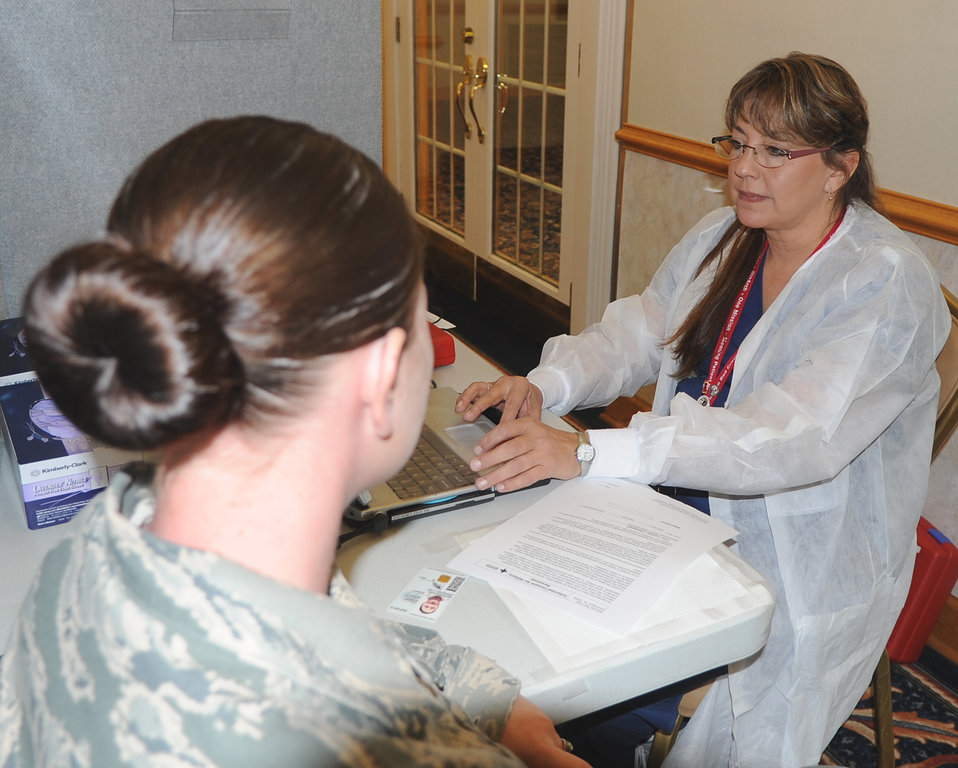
Draining the veins, for a good cause

Staff Sgt. Jennifer Nedzweckas, 4th Security Forces Squadron vehicle control officer, performs a pre-screening questionnaire from Donna Ward, American Red Cross medical technician, prior to donating blood at Seymour Johnson Air Force Base, Nov. 10, 2011. It takes approximately 30 minutes to donate. Nedzweckas hails from St. Roberts, Mo.